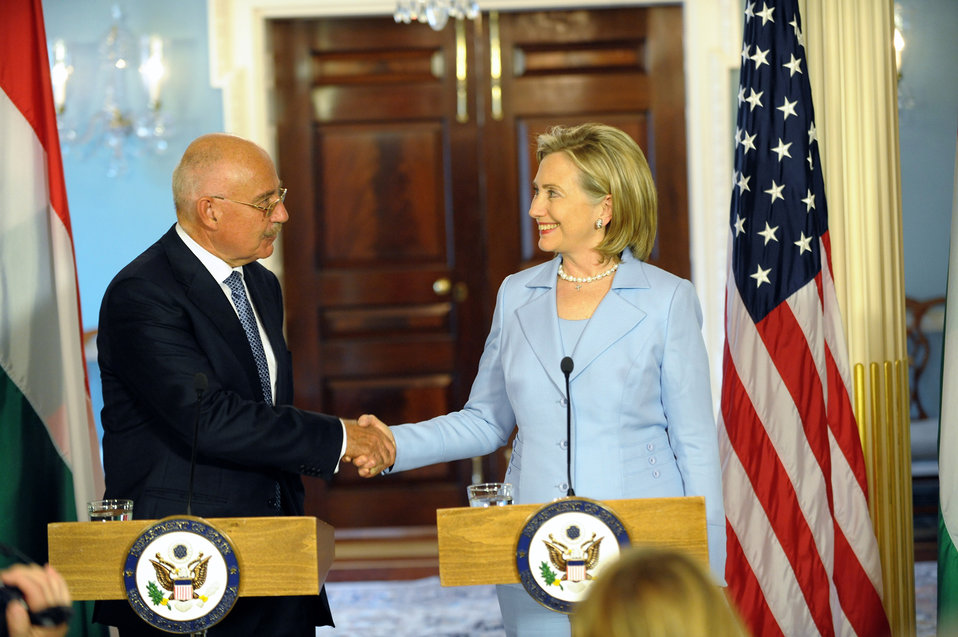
Secretary Clinton Holds Bilateral With Hungarian Foreign Minister Martonyi

U.S. Secretary of State Hillary Rodham Clinton holds a bilateral meeting with Hungarian Foreign Minister Janos Martonyi at the U.S. Department of State in Washington, D.C., on June 24, 2010.